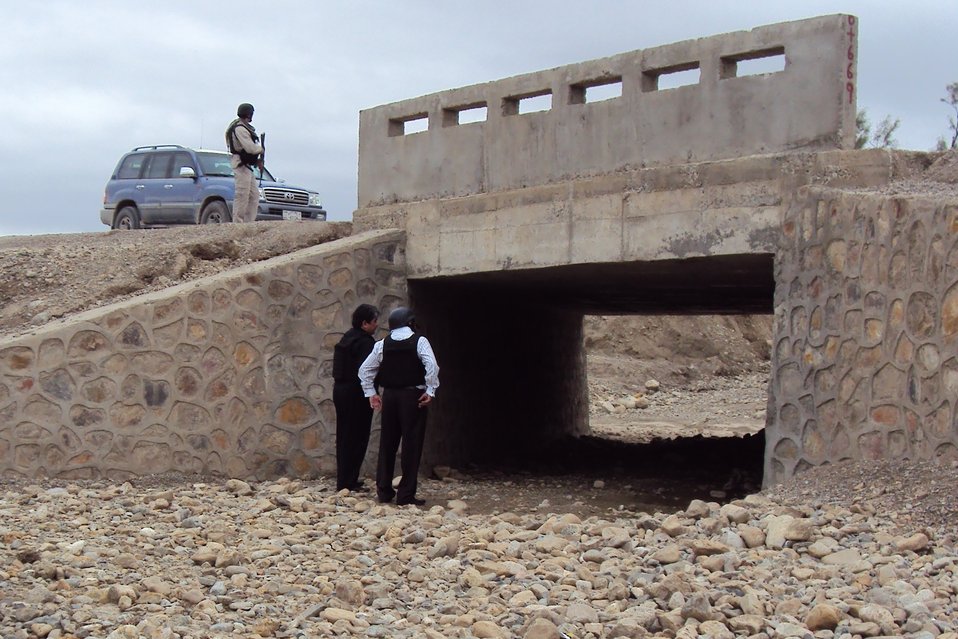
USAID and Minister of Public Works Inspect Completed Segment of a Strategic Provincial Roads in Eastern Afghanistan